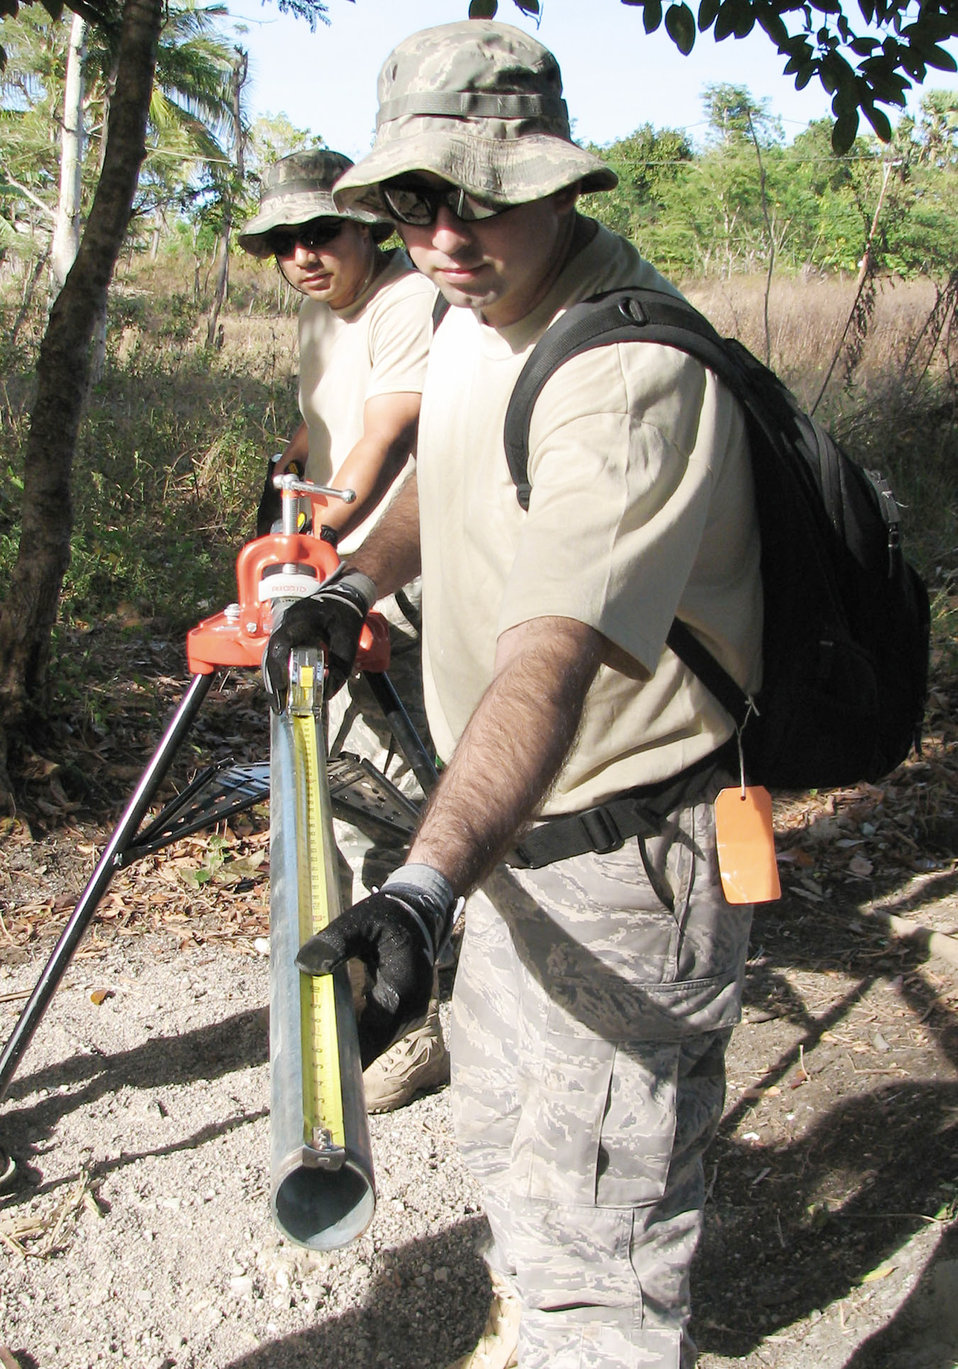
Indonesian, U.S. team keeps water flowing for village

Senior Airman Henry Benitez measures a water distribution pipe July 17 that will connect between a well and water pump in Naioni, Indonsesia. Once installed, the pump will transfer water more than 900 feet to a water storage tank. Airman Benitez, a utilities specialist assigned to the 15th Civil Engineer Squadron at Hickam Air Force Base, Hawaii, and other Airmen worked with Indonesian military members and civilians on the project as part of Operation Pacific Angel 2009. Pacific Angel is a Pacific Air Forces humanitarian and civic assistance operation led by 13th Air Force at Hickam Air Force Base, Hawaii.